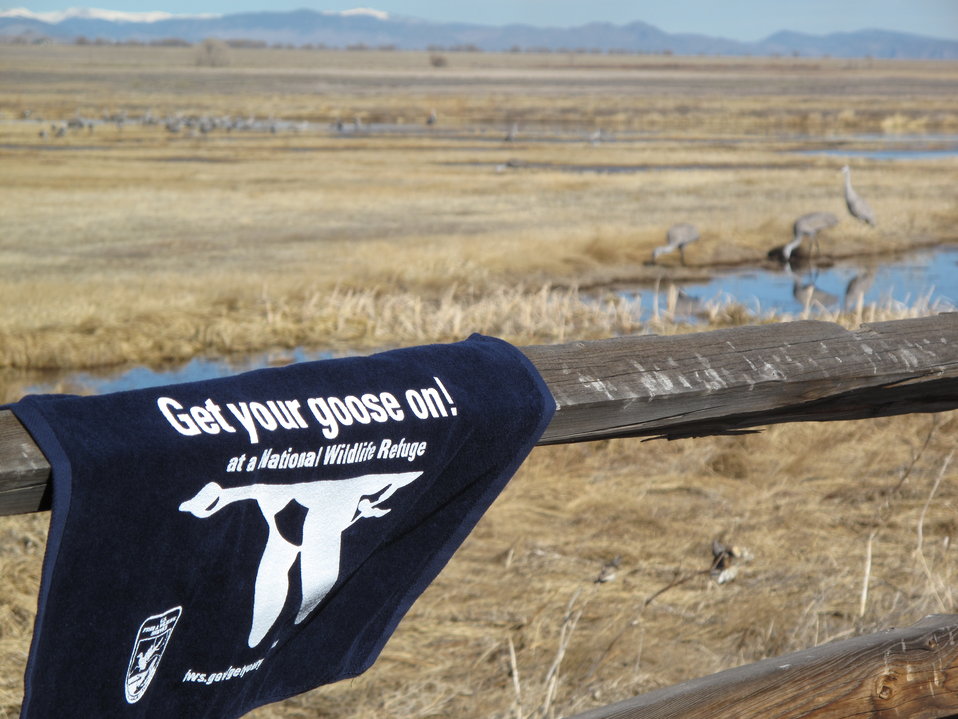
Get Your Goose On! at Monte Vista NWR

Note the sandhill cranes in the background.